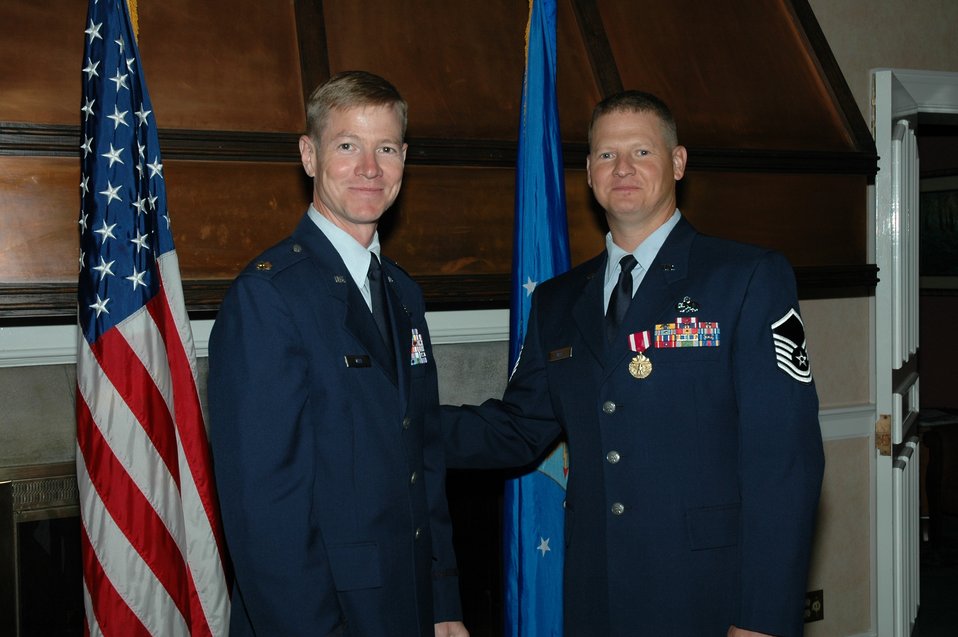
Tragedy propels brothers to train for AF Marathon

Lt. Col. Dan Witt (left) attended brother Charlie's retirement ceremony in September 2007. Their plans to run the 2008 U.S. Air Force Marathon together ended when Colonel Witt died in an aircraft accident in May.